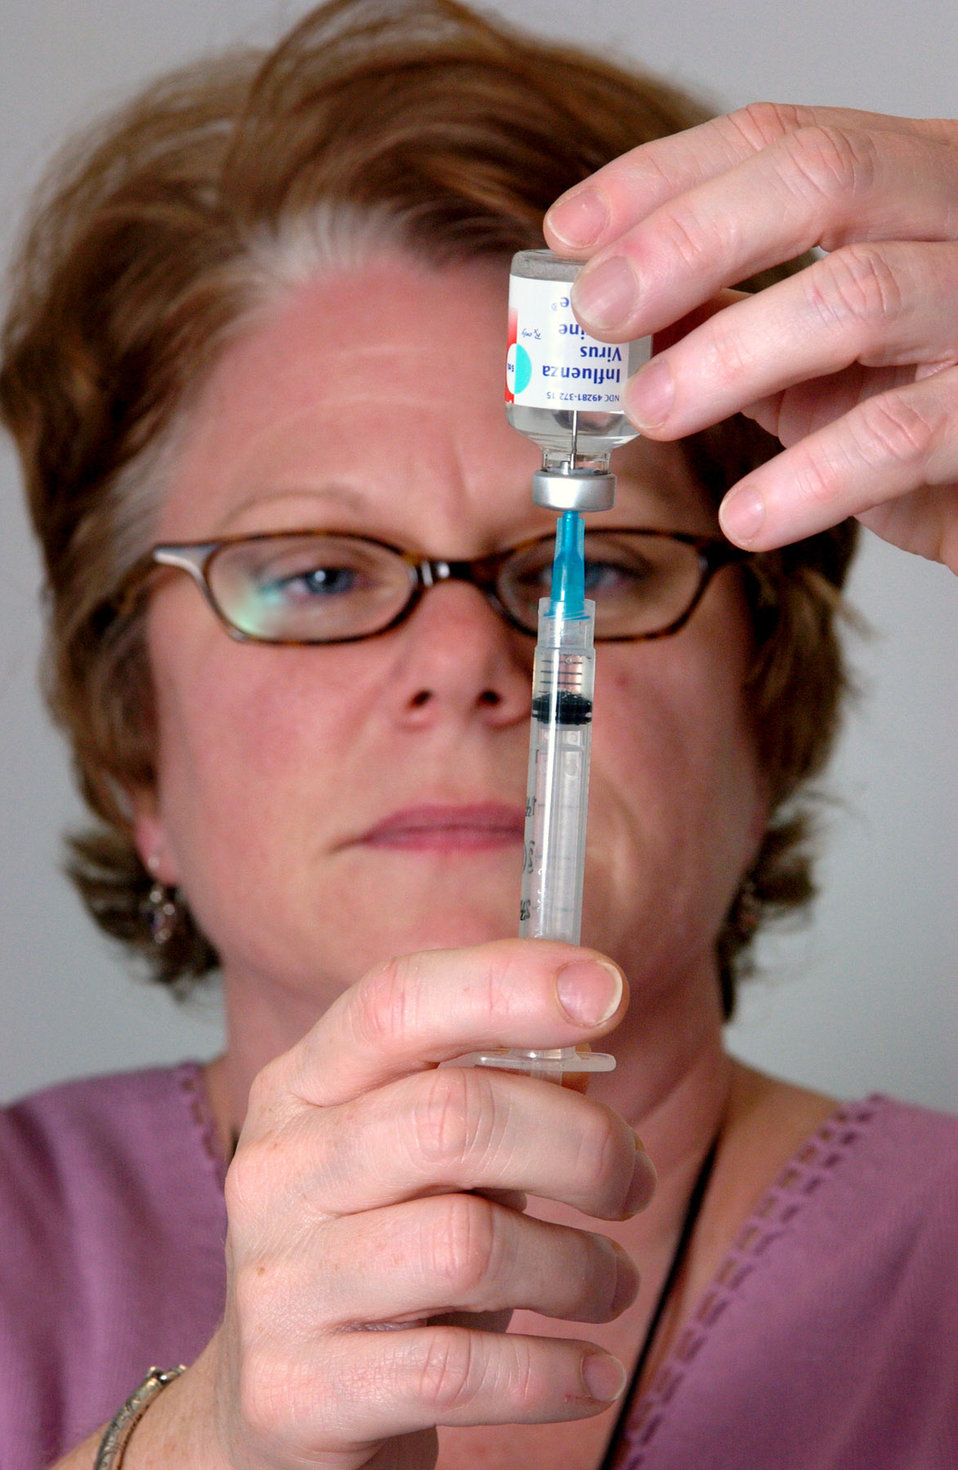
This is CDC Clinic Chief Nurse Lee Ann Jean-Louis extracting Influenza Virus Vaccine, Fluzone� from a 5 ml. vial.